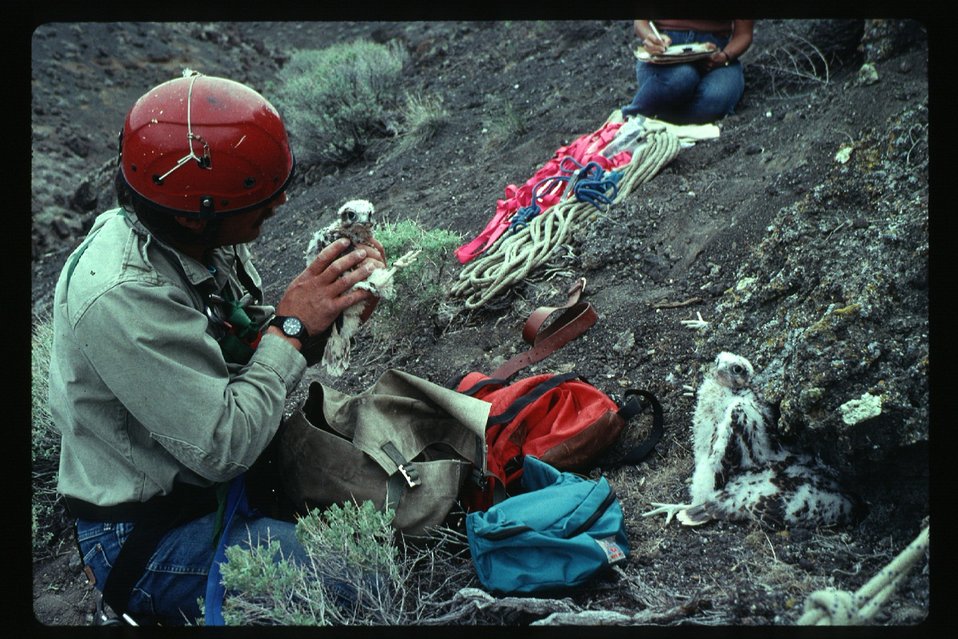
Prairie Falcon Fledglings Research Birds of Prey National Conservation Area BOP NCA Owyhee Field Office LSRD Lower Snake River District